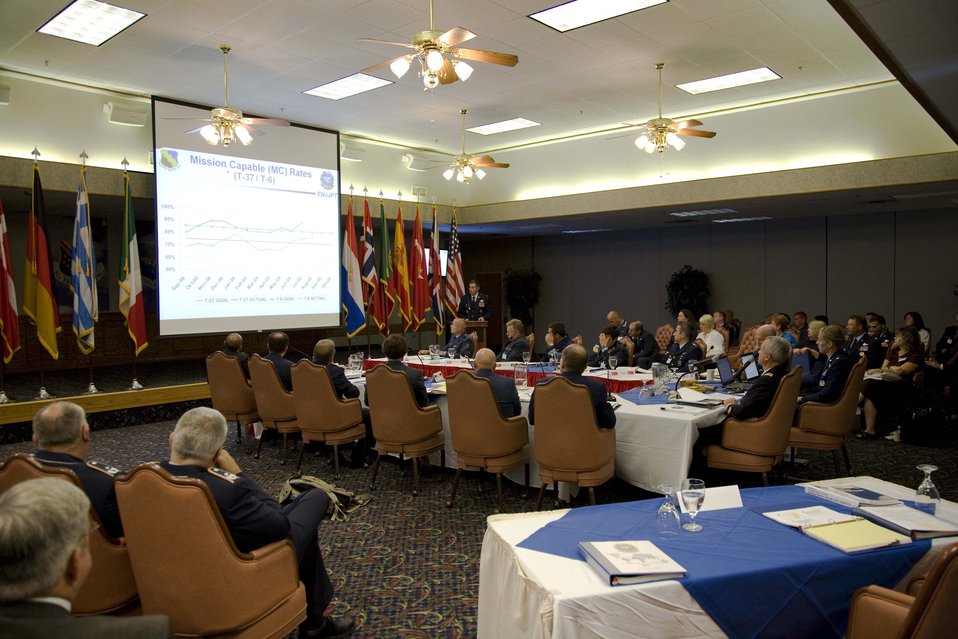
ENJJPT steering committee meets

Col. Kevin Schneider, 80th Flying Training Wing commander, provides a wing update briefing to the attendees of the Euro-NATO Joint Jet Pilot Training Program Steering Committee Sept. 25, 2009, at Sheppard Air Force Base, Texas. Members discussed the flow of student pilots, instructor pilot training, leadership and command opportunities, maintenance statistics and plans for ENJJPT.